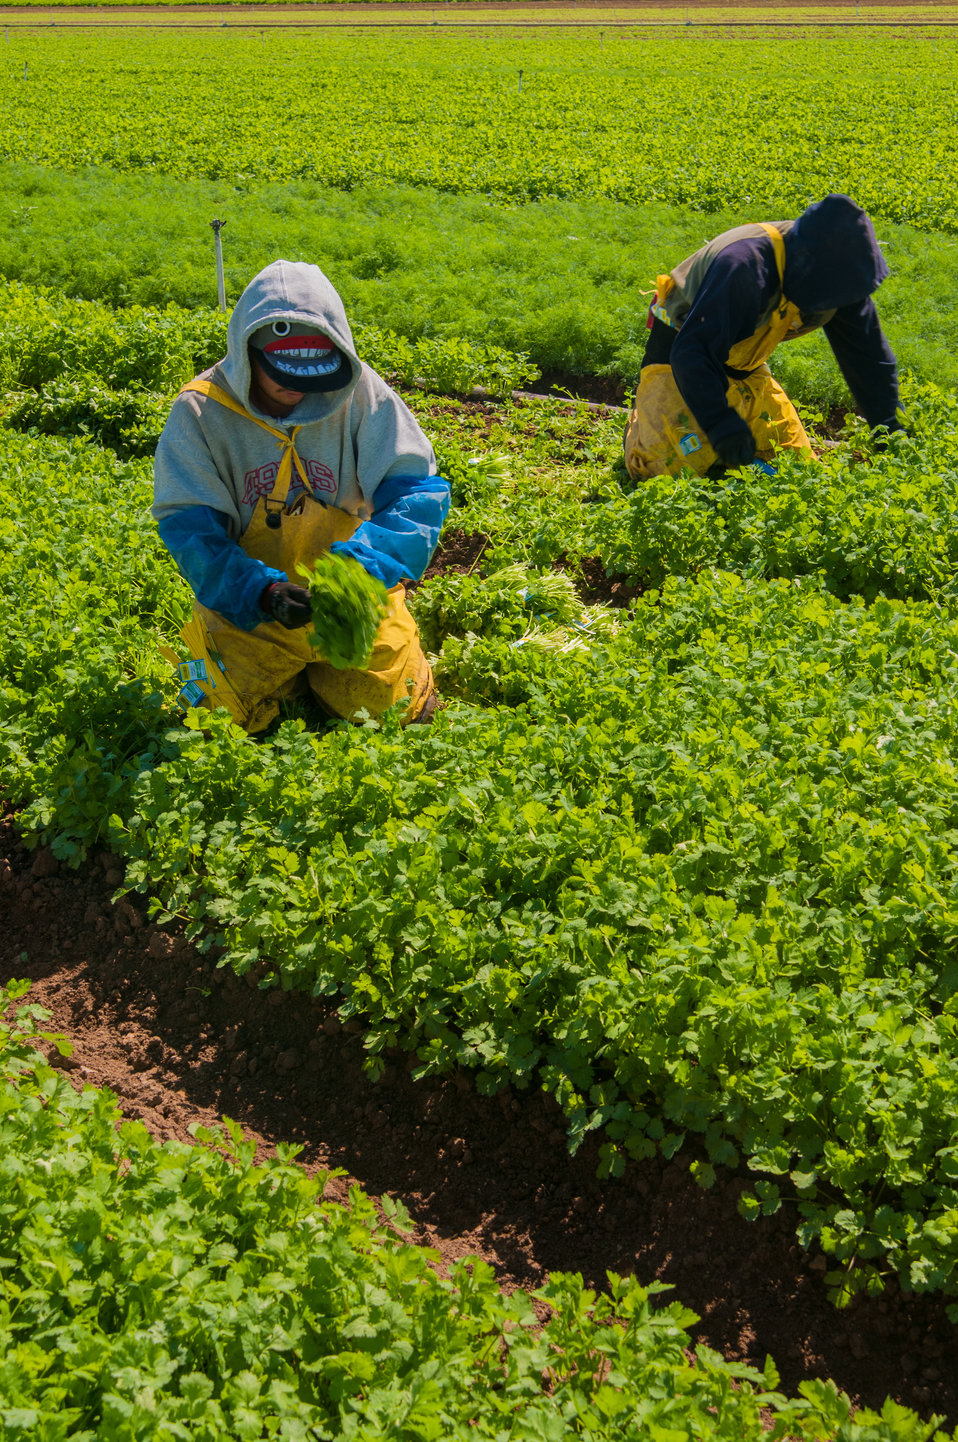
Migrant workers harvest Lettuce at Lakeside Organic Gardens in Watsonville, CA on Tuesday, Aug. 27, 2013.